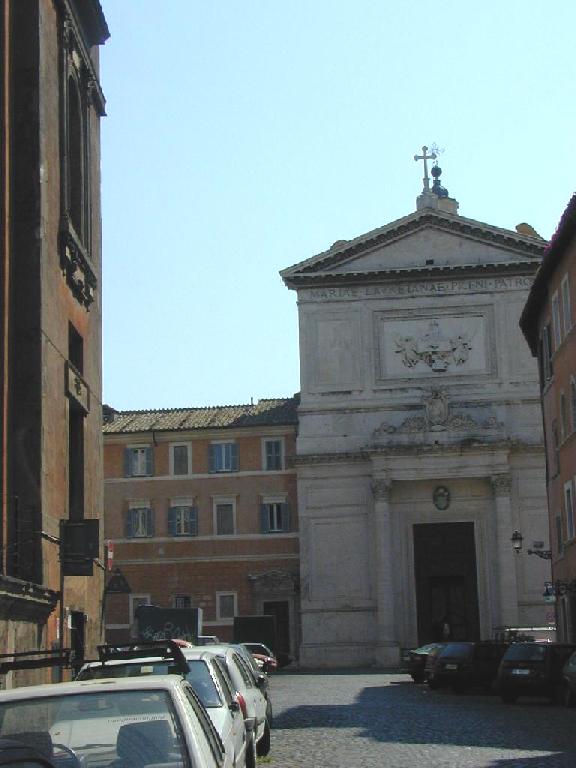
Italiano: Roma, San Salvatore in Lauro: Facciata. La facciata è una tarda opera di architettura purista (1857-1862) di Camillo Guglielmetti, e presenta un protiro a colonne corinzie sormontato da un bassorilievo di Rinaldo Rinaldi raffigurante la Santa Casa di Nazareth che, come vuole la tradizione, viene trasportata dagli angeli verso Loreto. Sul tetto della Santa Casa, seguendo l'iconografia classica, è assisa la Madonna con il Bambino e a Lei fa riferimento l'iscrizione sul fregio al di sotto del frontone: 'Mariae Lauretanae Piceni Patronae' ossia 'A Maria di Loreto patrona del Piceno'.